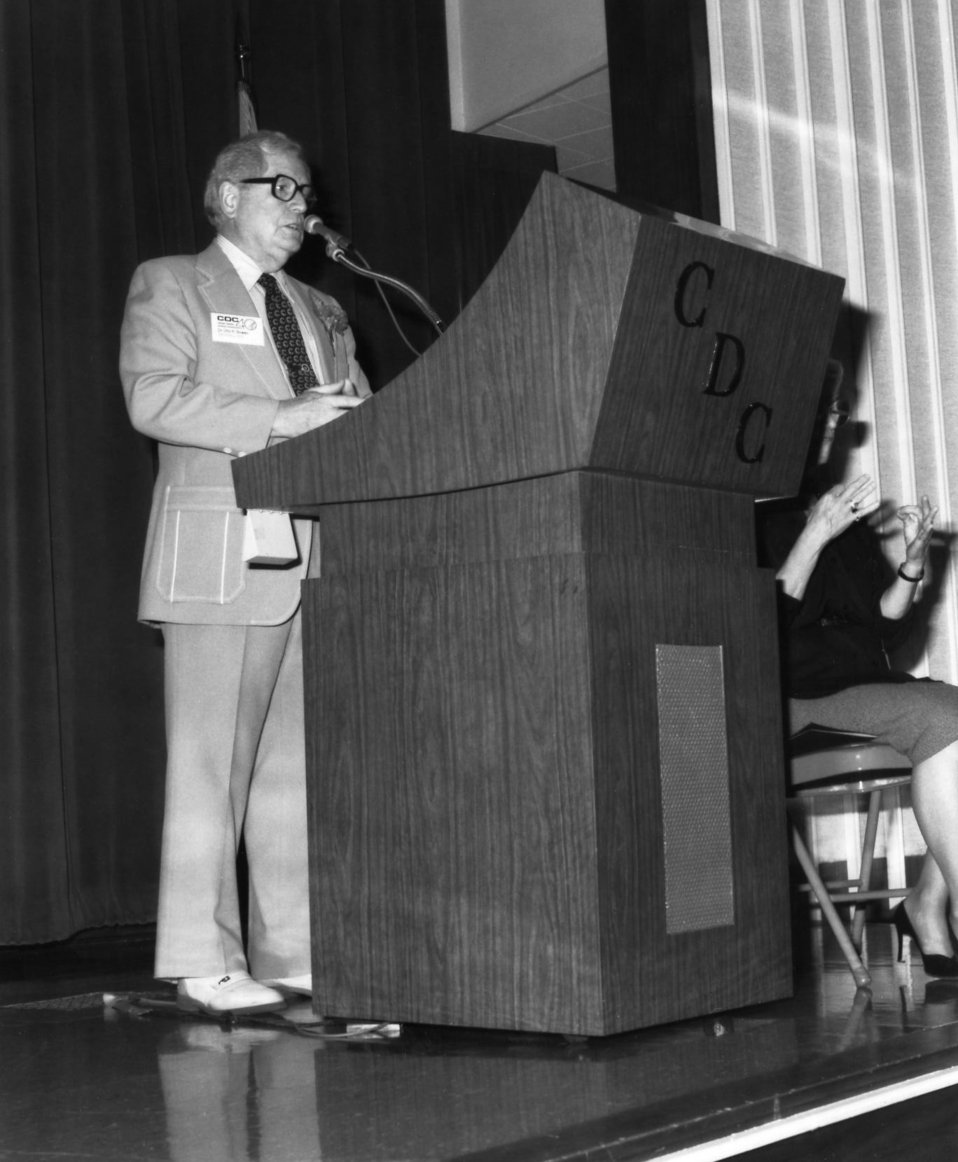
This 1986 photograph showed Otis Ray Bowen, speaking to Centers for Disease Control employees at the organization's 40th anniversary ceremony, who at the time was the Secretary of the U.S. Department of Health and Human Services, serving in that position from 1985 until 1989.